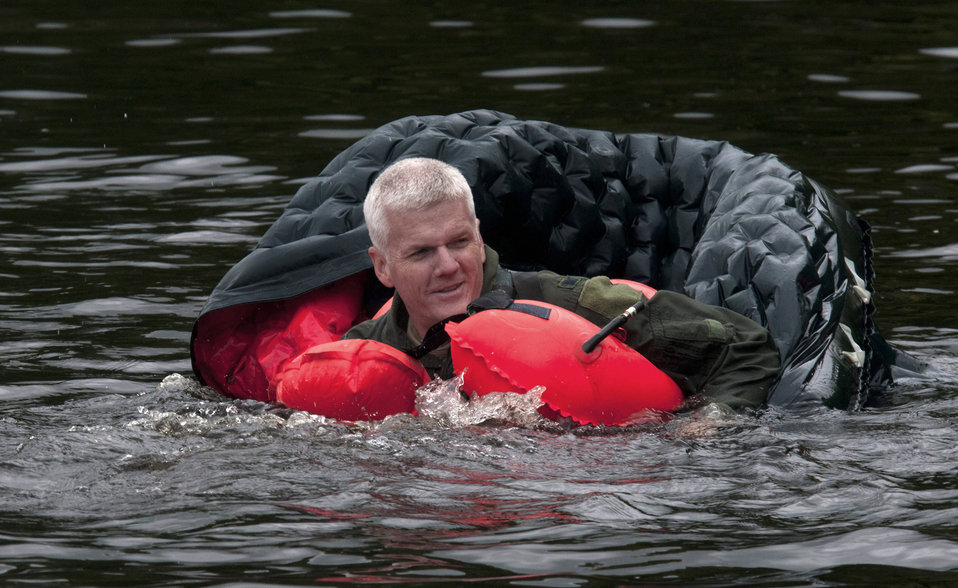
Water survival training

Col. James T. Johnson uses a life raft to stay afloat June 11, 2011, during aircrew survival training in the St. Croix River near Hastings, Minn. Colonel Johnson is assigned to the Minnesota Air National Guard's 133rd Airlift Wing.